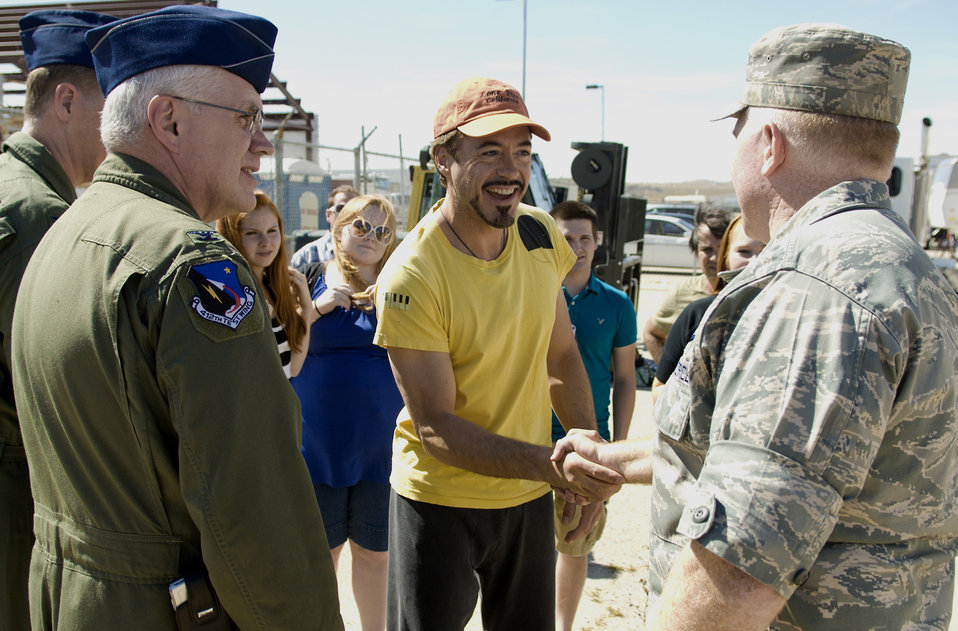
'Ironman' visits Edwards